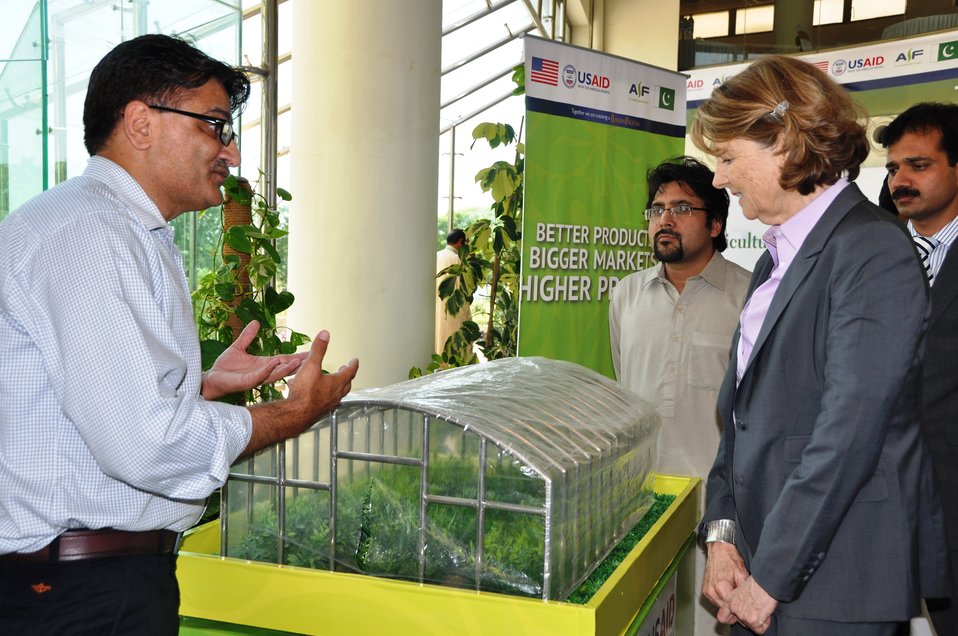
Pakistan Vegetable Fair 2014 (organized by USAID’s Agribusiness Project)

A project official briefing Acting Mission Director for USAID, Pakistan, Nancy Estes about the high tunnels.